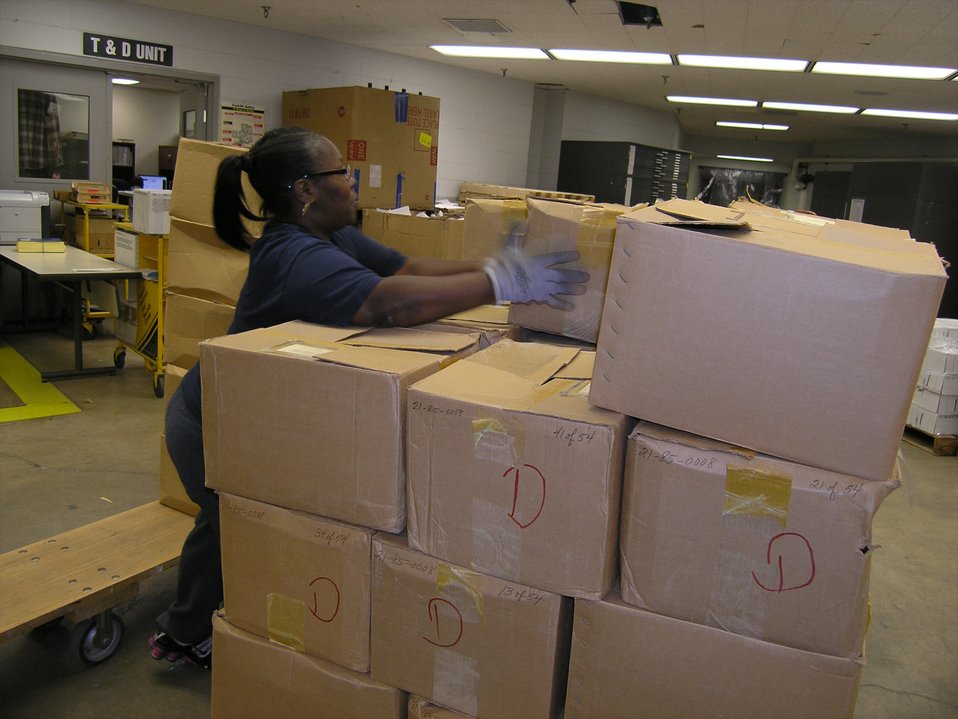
Sunarra Davis stacking disposal in the Federal Records Center process area; Location: Chicago Federal Records Center, Chicago, IL